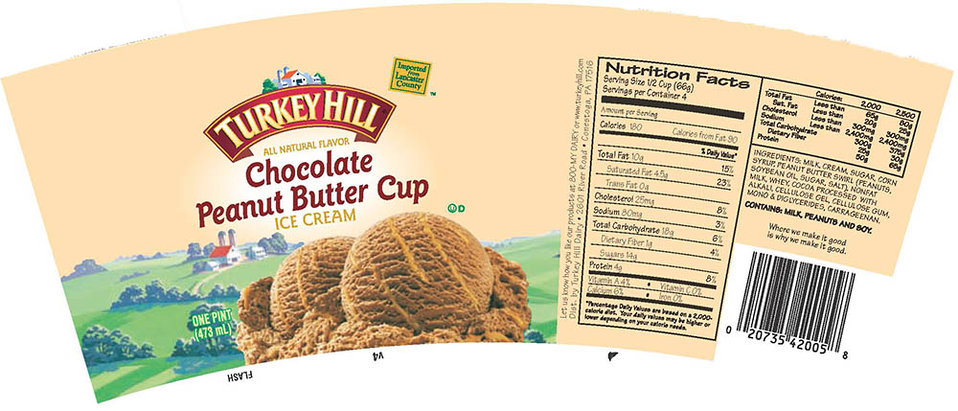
RECALLED – Ice Cream

October 4, 2013 – Product Recall – Turkey Hill Dairy Issues Voluntary Recall of Chocolate Peanut Butter Cup Premium Ice Cream,Fudge Ripple Premium Ice Cream, and Moose Tracks Stuff’d Frozen Dairy Dessert.